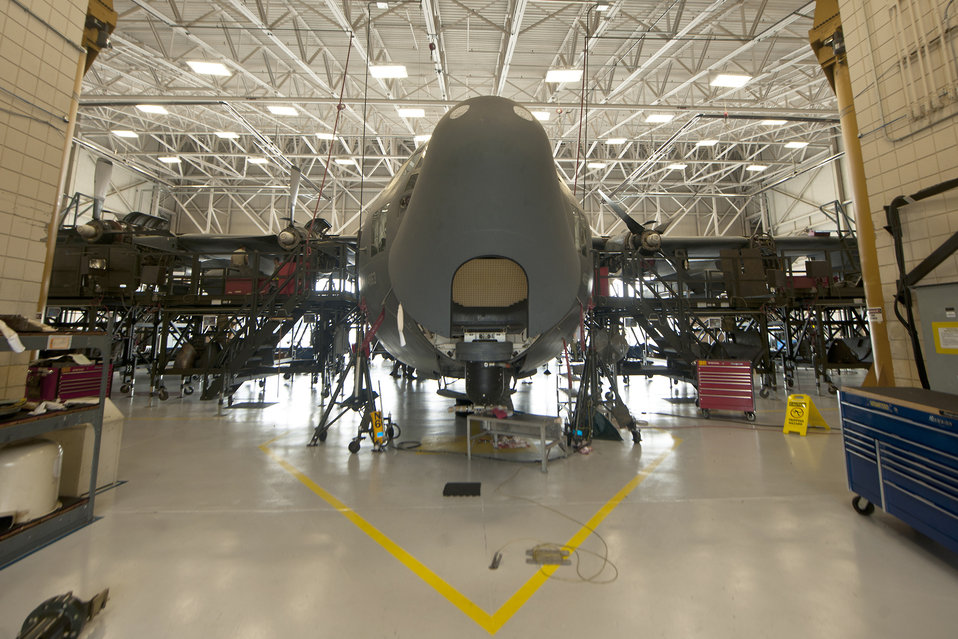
Inspection at Moody

An HC-130P Combat King awaits an inspection June 20, 2011, at Moody Air Force Base, Ga.